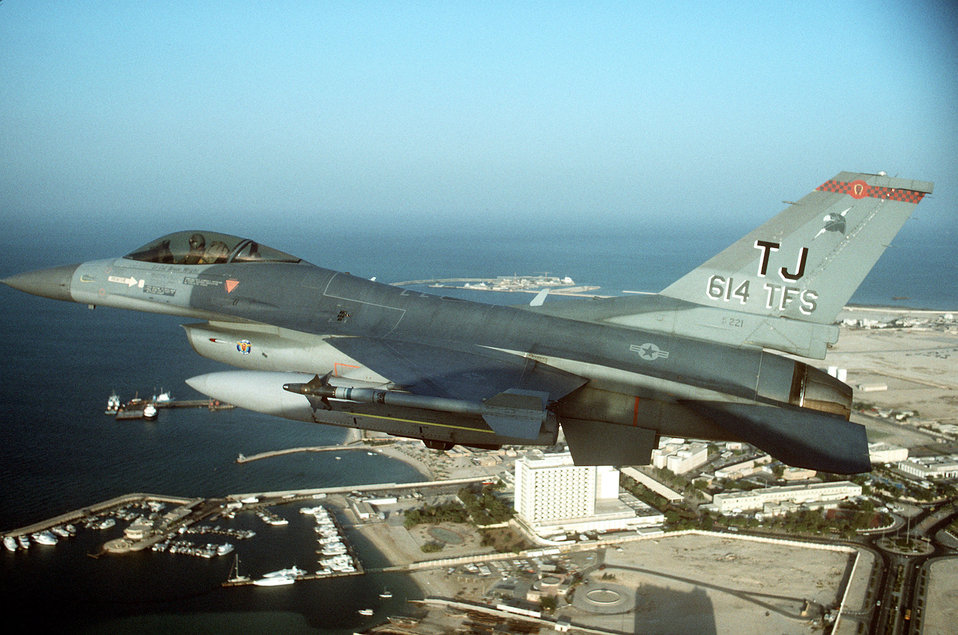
F-16C Fighting Falcon

1990's -- An air-to-air view of an F-16C Fighting Falcon fighter aircraft of the 614th Tactical Fighter Squadron, 401st Tactical Fighter Wing of Torrejon Air Base, Spain, during Operation Desert Shield.